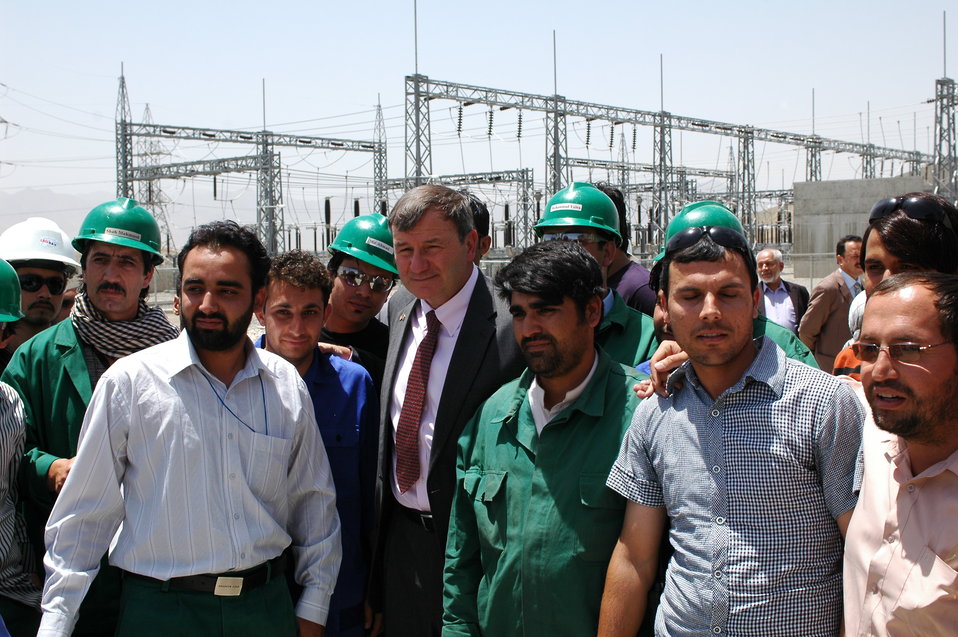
105 MW Tarakhil Power Plant Handover